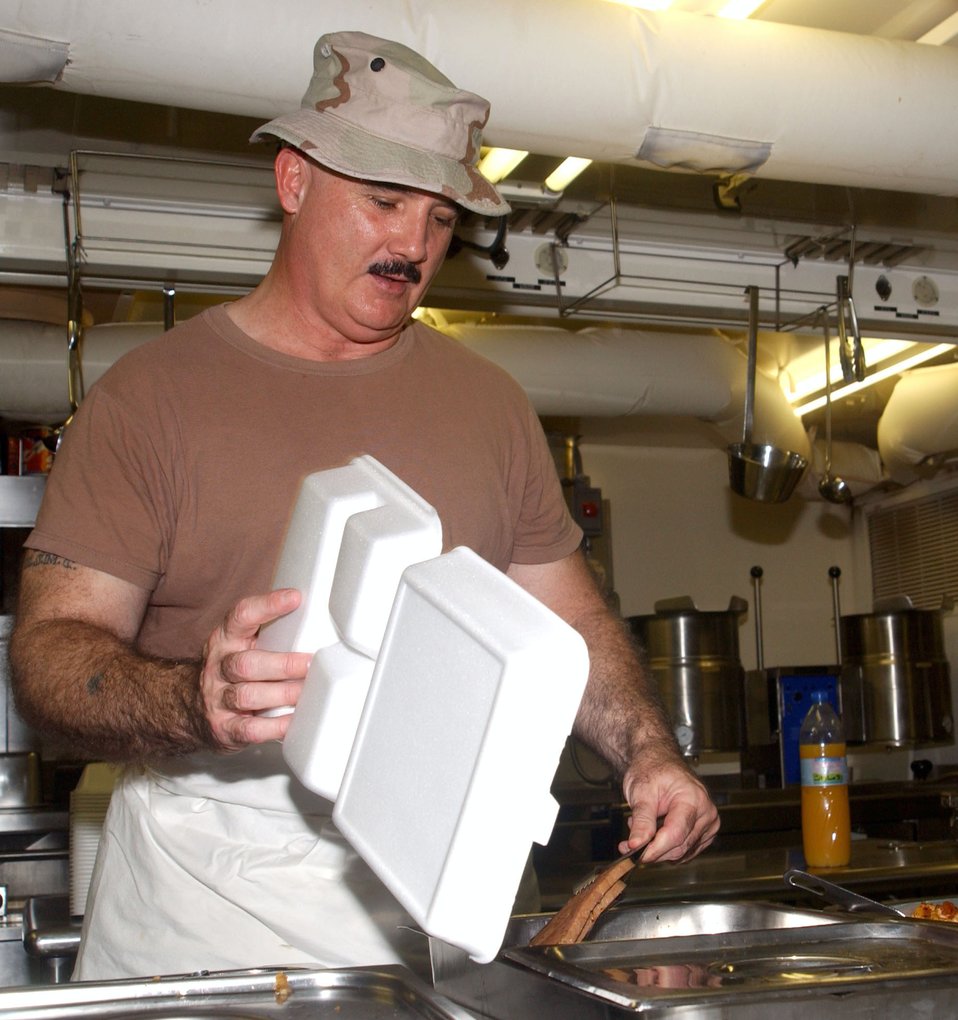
SOUTHWEST ASIA -- Staff Sgt. James Murphy serves food at the flightline dining facility here. His military career spans 30 years and he has been in the Marines, Army National Guard, Navy and Air Force Reserve. Sergeant Murphy is assigned to the 380th Expeditionary Services Squadron.